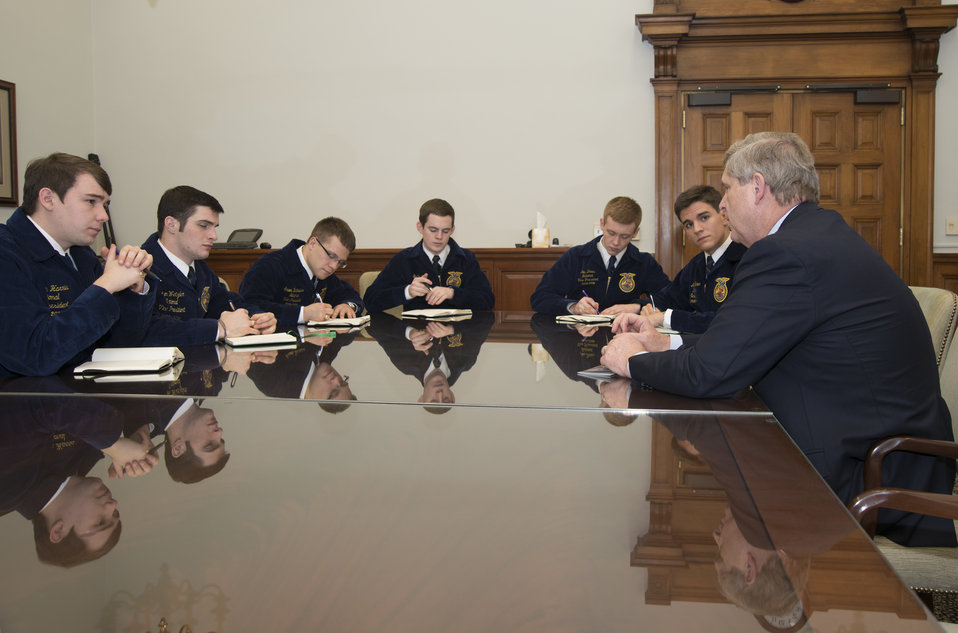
Agriculture Secretary Tom Vilsack meets with National FFA officers at the U.S. Department of Agriculture (USDA), Whitten Building in Washington, DC, on Wednesday, Jan.15, 2014. USDA photo by Tom Witham. Agriculture Secretary Tom Vilsack meets with National FFA officers at the U.S. Department of Agriculture (USDA), Whitten Building in Washington, DC, on Wednesday, Jan.15, 2014. (L to R Southern Region Vice President Jackson Harris, Western Region Vice President Jason Wetzler, Central Region Vice President Steven Brockshus, President Brian Walsh, Eastern Region Vice President Wes Davis, and Secretary Mitch Baker).